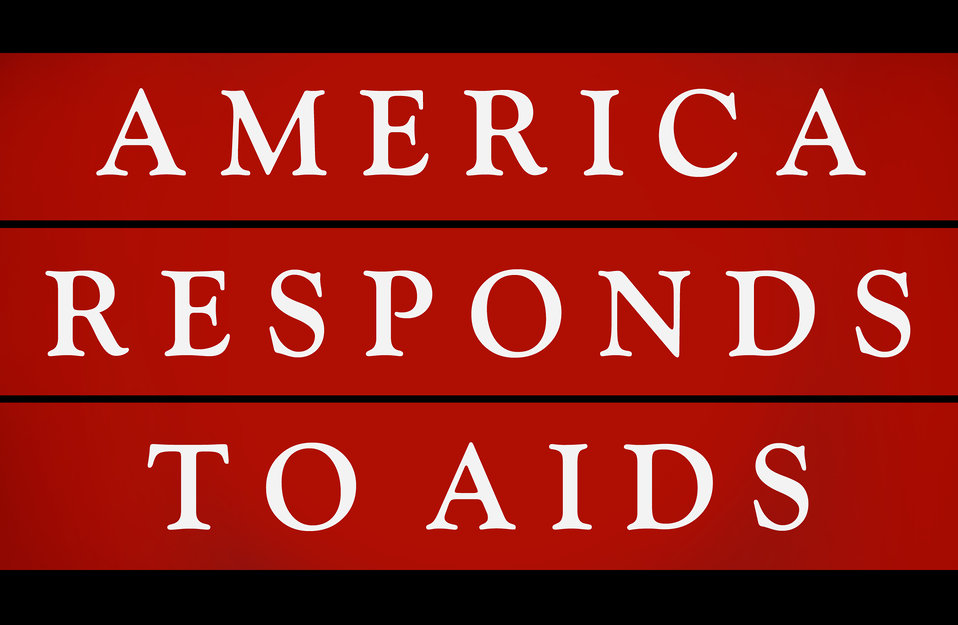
Sign: America Responds to AIDS.